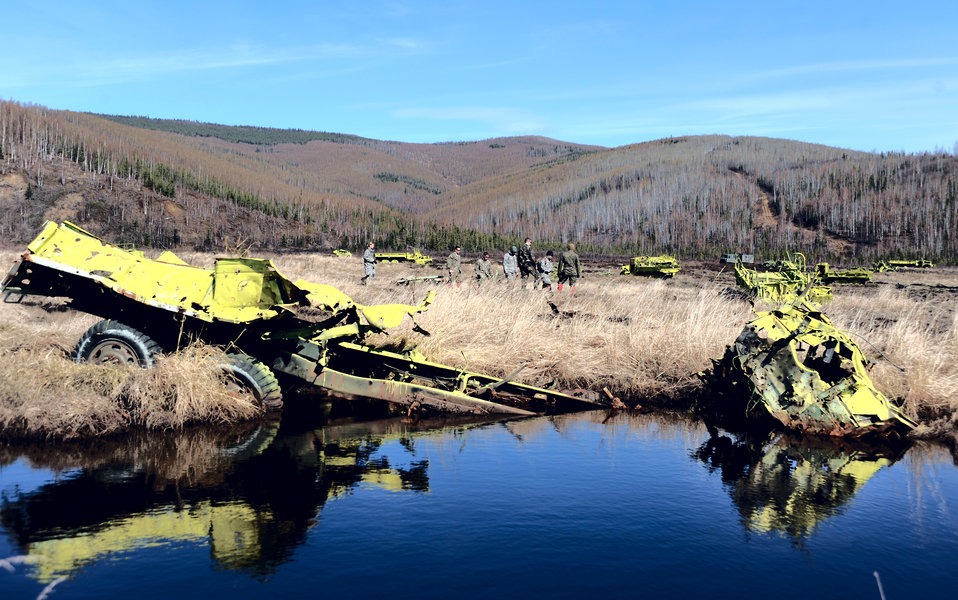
Servicemembers clear Alaskan bombing range

Air Force and Marine explosive ordnance disposal personnel search around the target areas on the Yukon training area May 14 at Eielson Air Force Base, Alaska. The 354th Civil Engineer Squadron EOD shop, with the help of 60th EOD from Travis AFB, Calif., 509th EOD from Whiteman AFB, Mo., and Marines from the 1st EOD Company, Camp Pendleton, Calif., cleared 10,000 acres of land of hazardous inert and live ordnance.